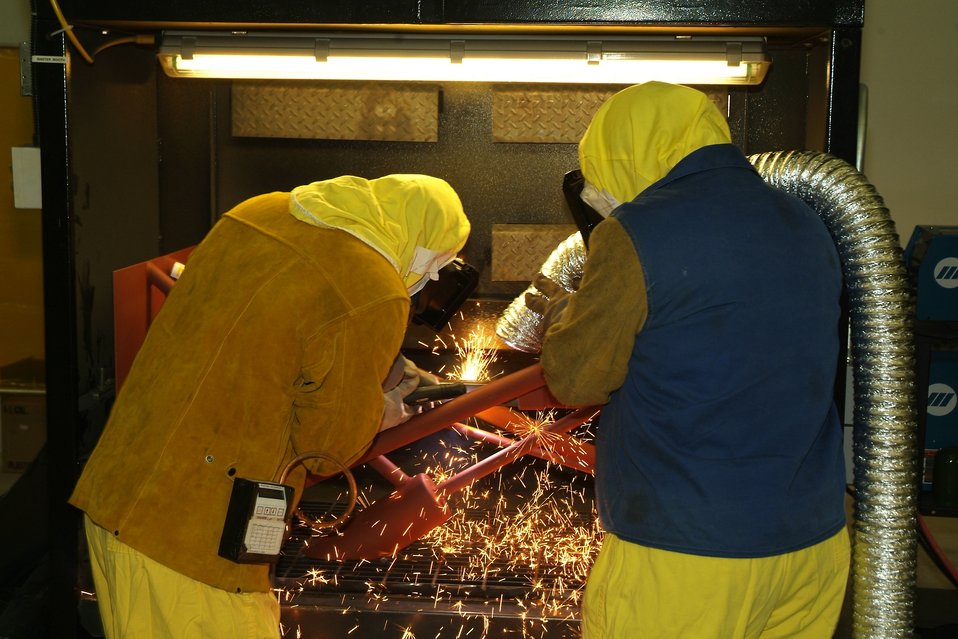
Paducah Recovery Act work

Maintenance mechanics train with plasma arc-cutting equipment prior to removing miles of piping from old buildings at the Paducah Site.